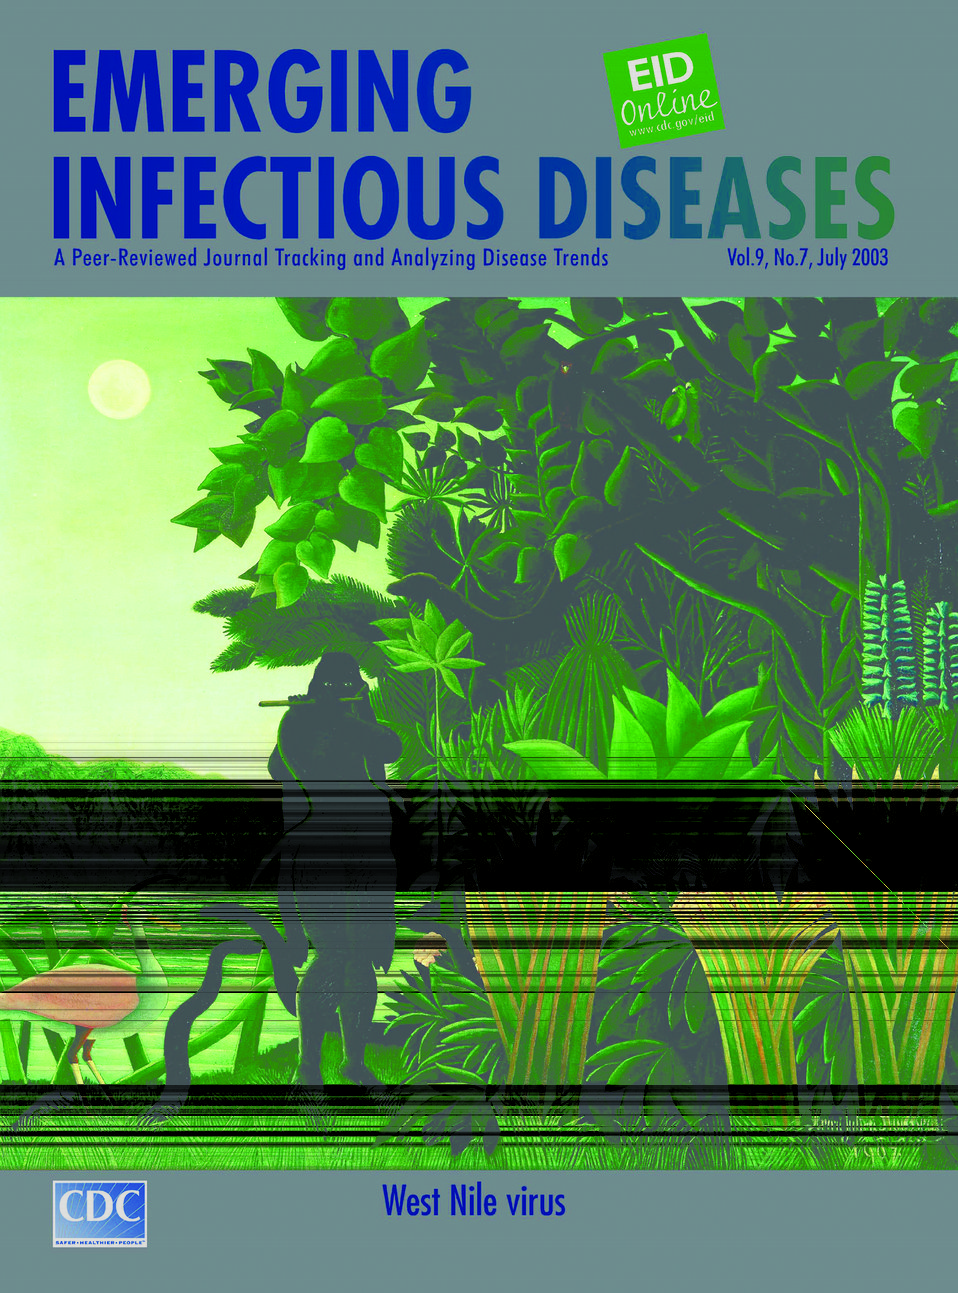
Emerging Infectious Diseases (EID) cover artwork for Volume 9, Number 7, July 2003 issue.